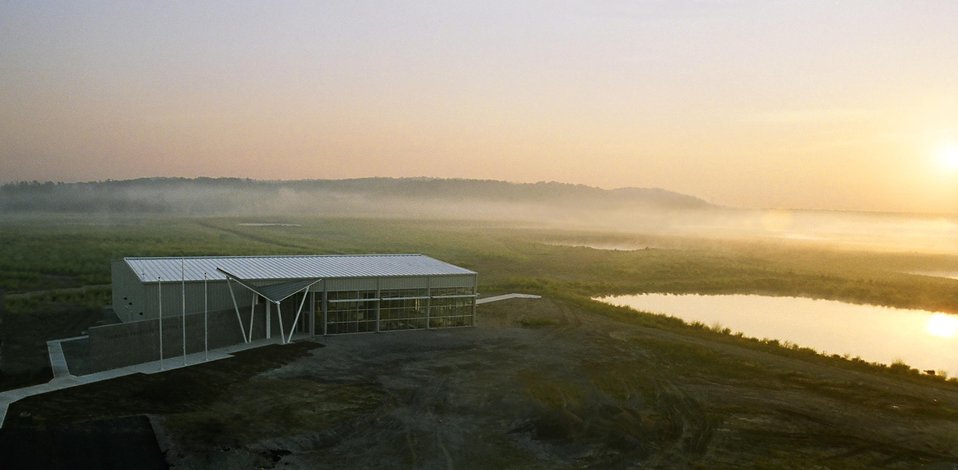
Fernald Preserve Visitor Center.